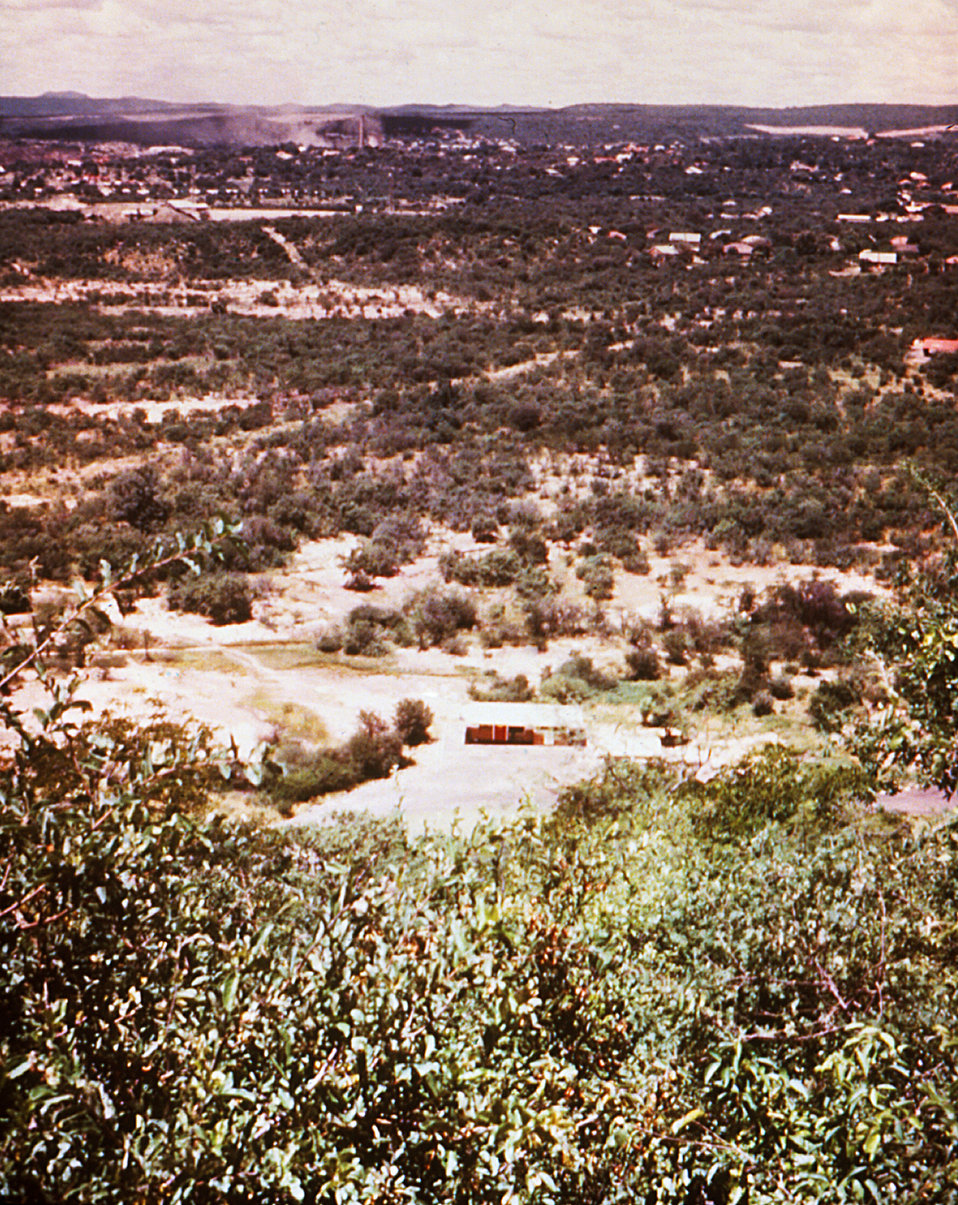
This Wankie, Rhodesian roadside (from above) is where a Marburg patient first came into contact with an unknown virus vector.